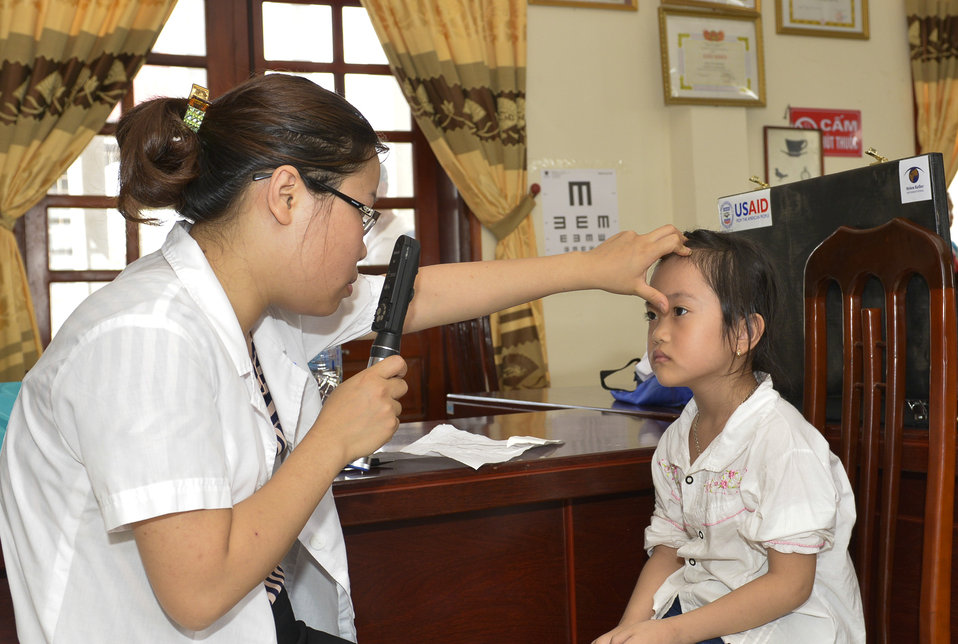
Eye screening for kindergarten children in Quoc Oai district of Hanoi

Quoc Oai, Hanoi. May 31, 2014.